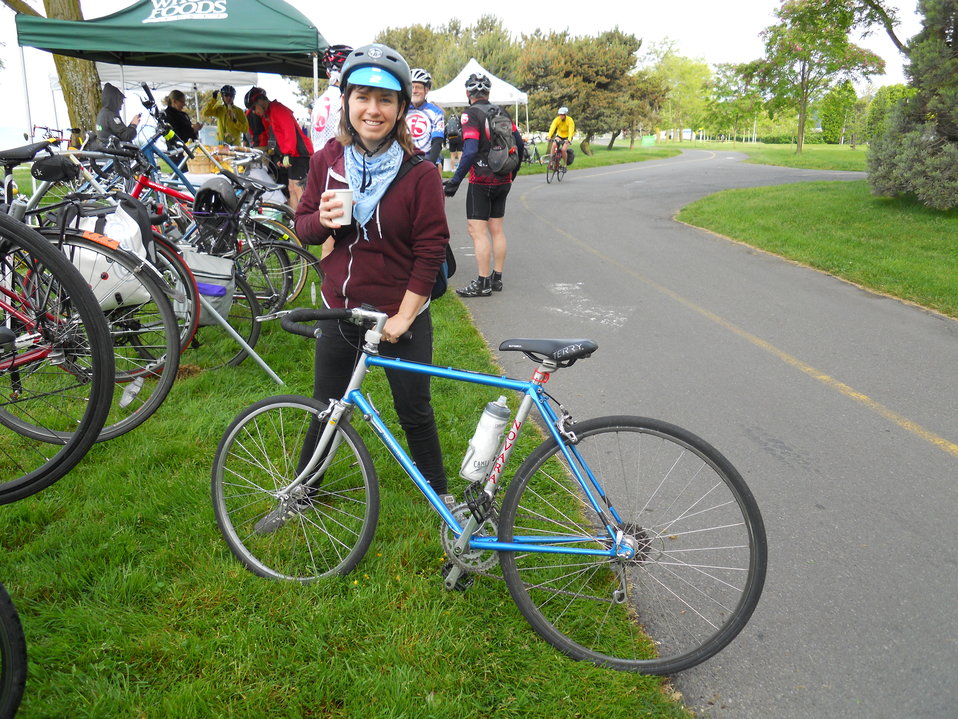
EPA Seattle Bike-To-Work Day 2014

Seattle area commuters show off their rides at EPA’s Bike-to-Work Day station.